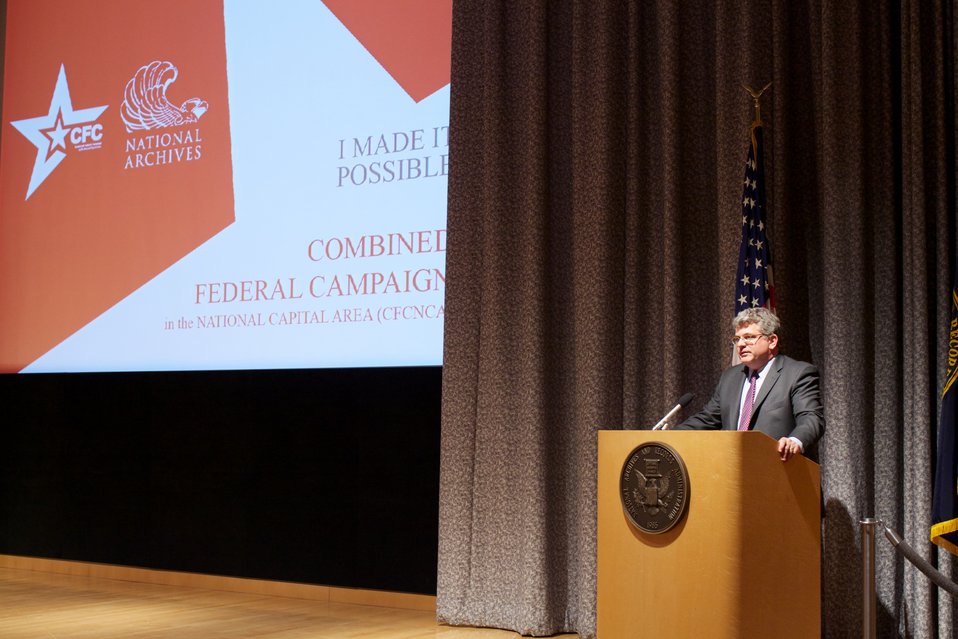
CFC Recognition Event